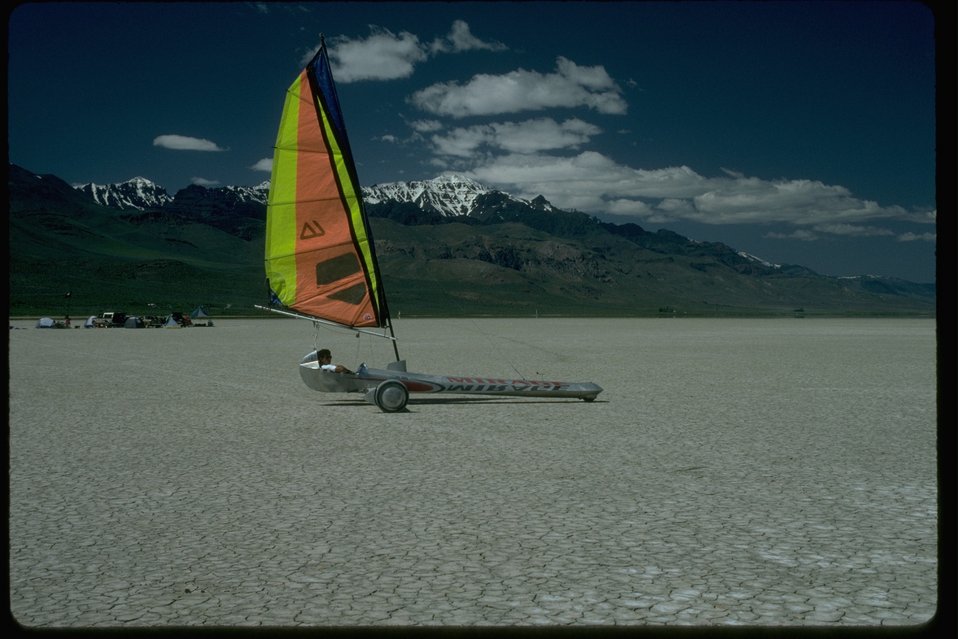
Wind sailing in the Alvord Desert north of Fields, Oregon.